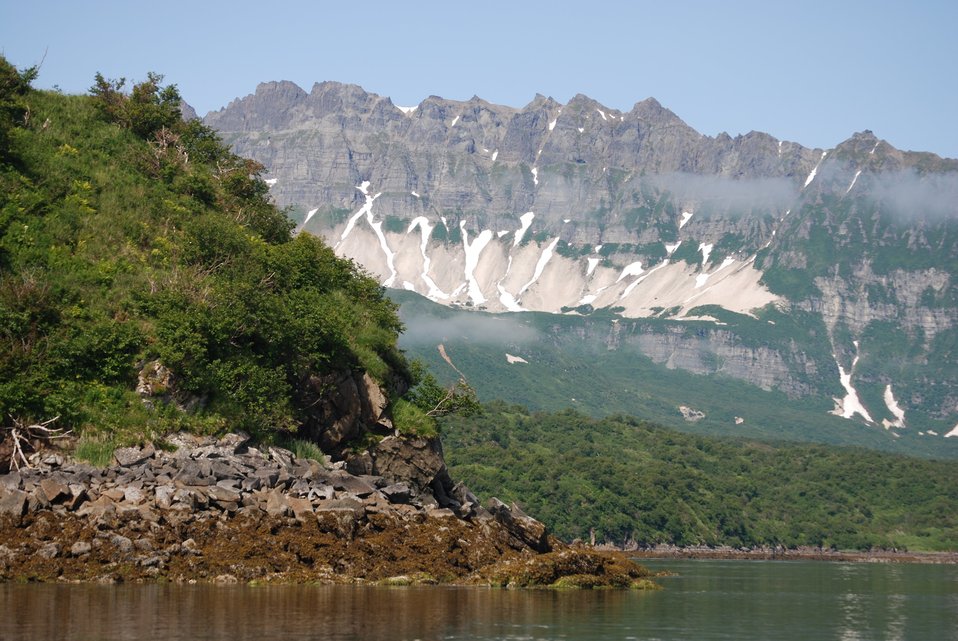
Amalik Bay at low tide showing algae covered rocks and low scrub brush covering the lower slopes of the mountains in Katmai Park and Wilderness. Perhaps the lighter material is remnants of the volcanic ash from the great eruption of 1912.